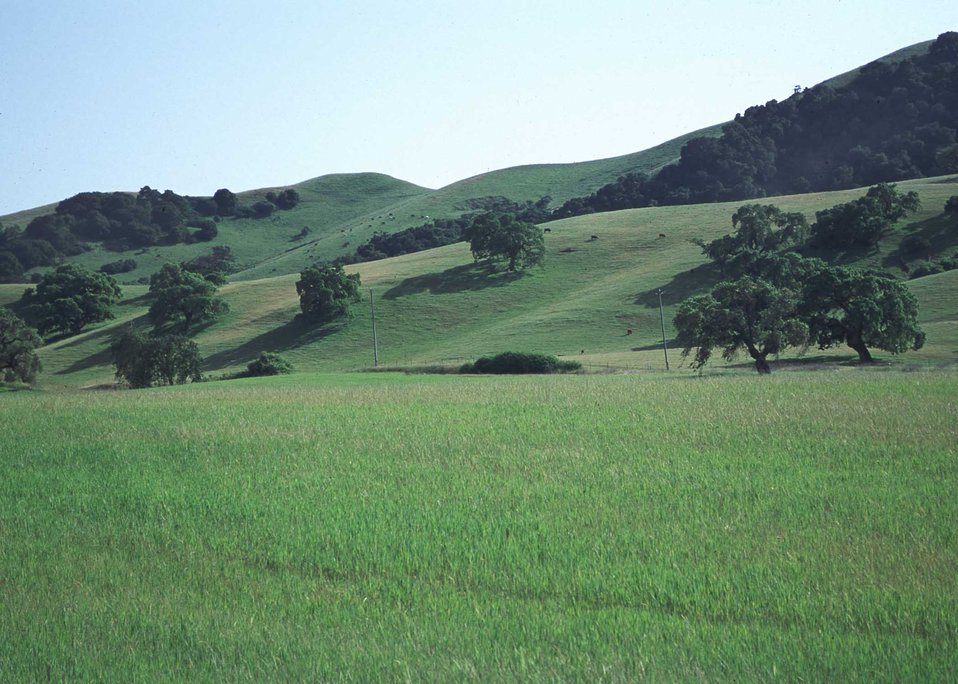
Northern CA rangeland.